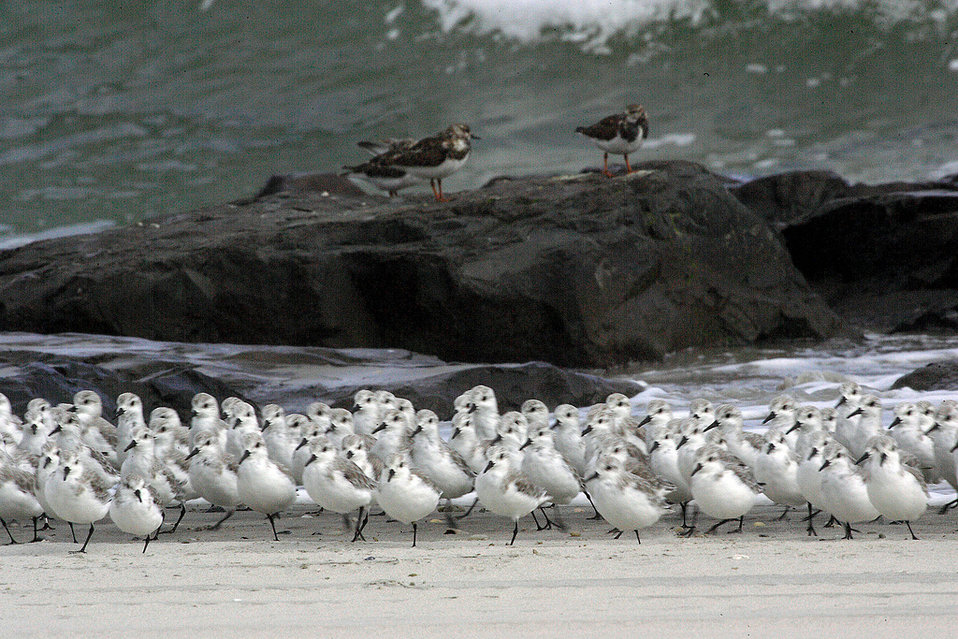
sanderlings and ruddy turnstones

Blackwater National Wildlife Refuge, MD